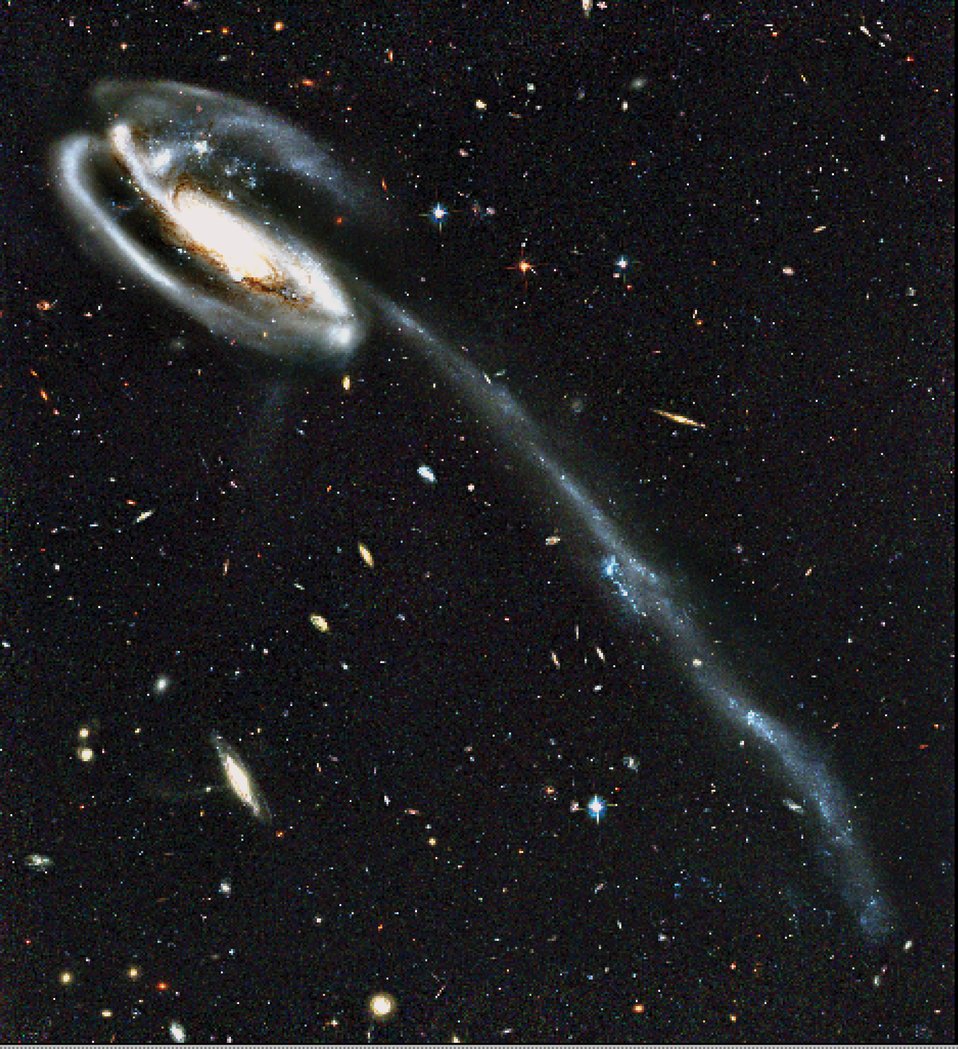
NIST Math Technique Opens Clearer Window on Universe

Applying the APEX method to the Tadpole galaxy image brings both 'foreground' objects and background galaxies into significantly sharper focus.